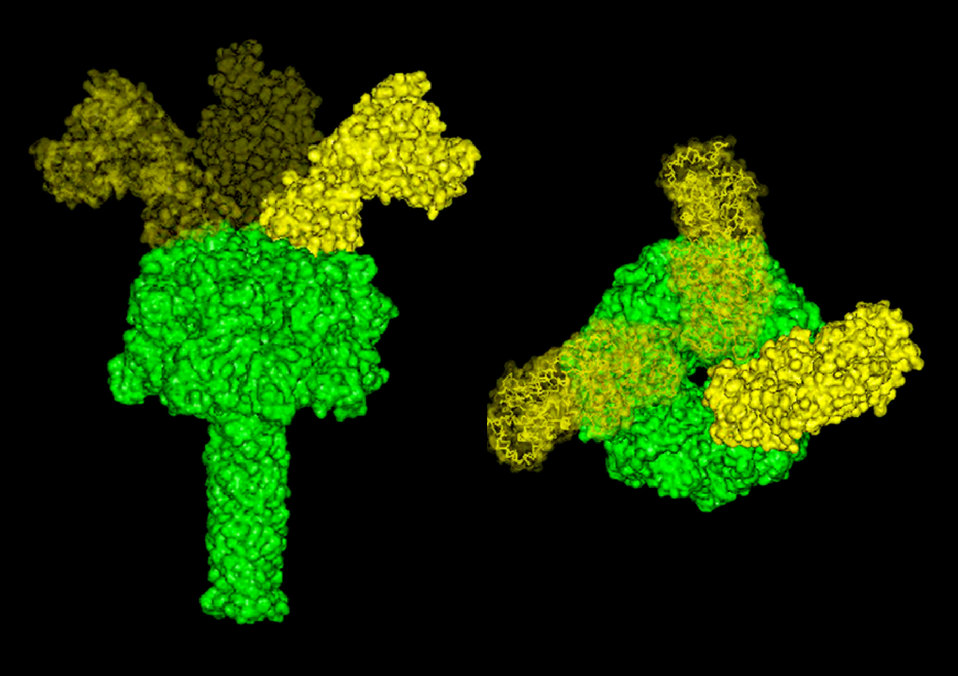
Anthrax Detection

A computer model shows side and top views of two different proteins produced by anthrax bacteria. The green molecule is 'protective antigen' (PA), which spontaneously forms pores that penetrate organic membranes such as cell walls. The yellow molecule is 'lethal factor (LF).' When a voltage is applied across a membrane studded with PA pores, both positive and negative ions flow through. Once LF binds to the pore, however, current only flows in one direction.